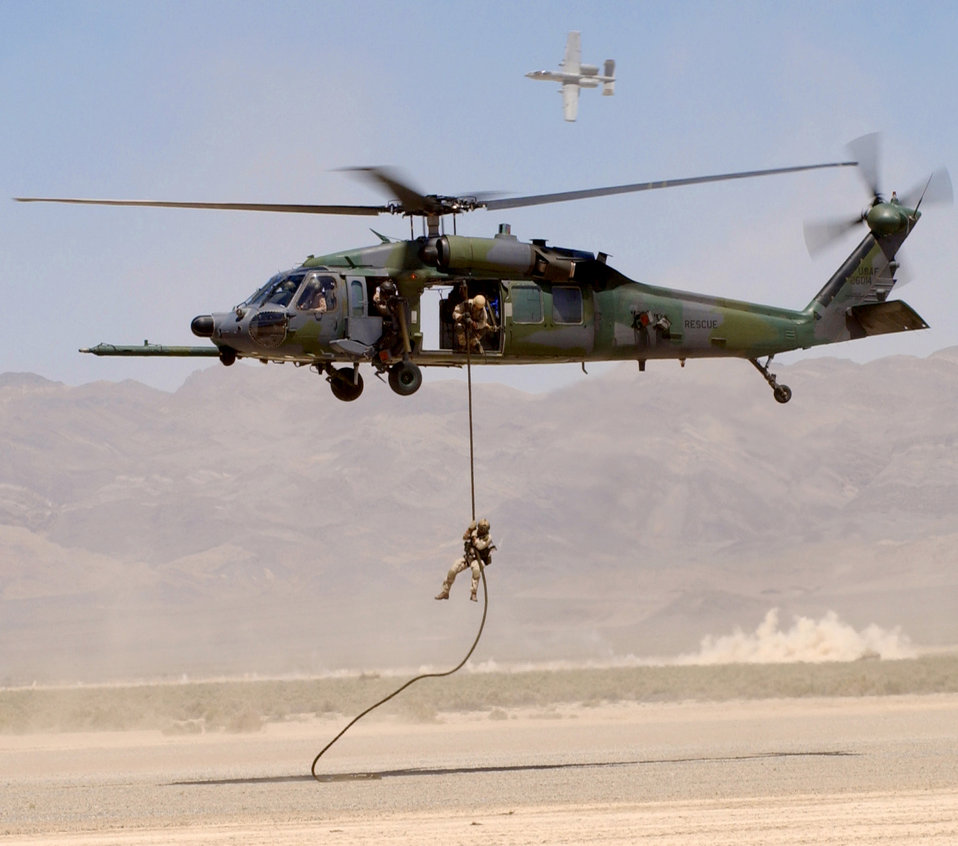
Downed on the range

NELLIS AIR FORCE BASE, Nev. -- An HH-60G Pave Hawk retrieves a pararescueman as an A-10 Thunderbolt II provides cover fire during a firepower demonstration on the bombing range here May 12. The pararescueman is a member of the 58th Rescue Squadron.